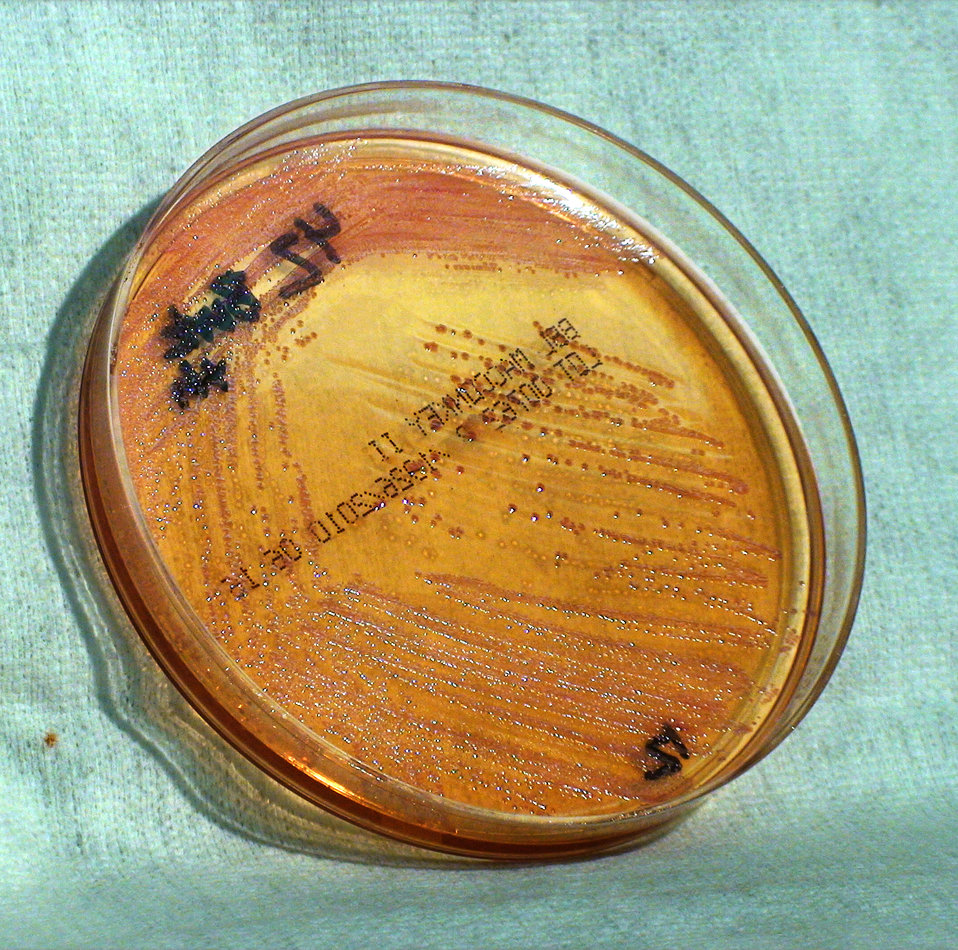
This photograph depicts the colonial morphology displayed by Gram-negative Burkholderia thailandensis bacteria, which was grown on a medium of MacConkey agar, for a 48 hour time period, at a temperature of 42�C. Of importance, is the metallic sheen displayed by these colonies. See PHIL 12414, for a closer view of these colonies, and this reflective phenomenon.